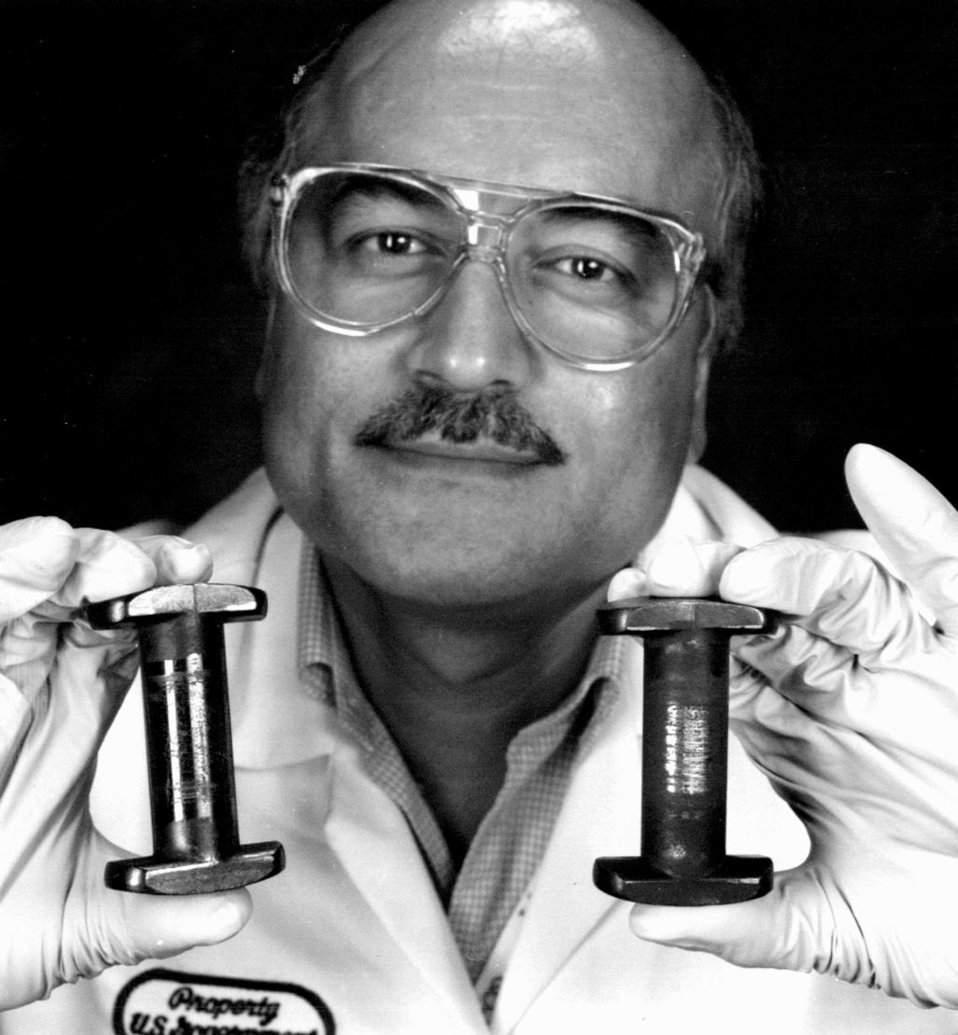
ANL MATERIALS SCIENTIST, ALI ERDEMIR HOLDING TWO CHAIN PINS TESTED AT AN AUTOMOTIVE ASSEMBLY PLANT IN ONTARIO, CANADA.

THE PIN COATED WITH NEAR-FRICTIONLESS CARBON SHOWS MINIMAL WEAR AND BUILDUP AFTER NINE MONTHS OF REGULAR USE. THE UN-COATED PIN (RIGHT) SHOWS SIGNIFICANT WEAR AND BUILD UP AFTER ONLY THREE MONTHS. THE SUPER-THICK, ULTRA-HARD COATING, DEVELOPED AT ANL BY MR. ERDEMIR, MAY EXTEND THE LIFE OF CONVEYOR CHAINS AND REDUCE THE NEED FOR POTENTIALLY HARMFUL ORGANIC LUBRICANTS.